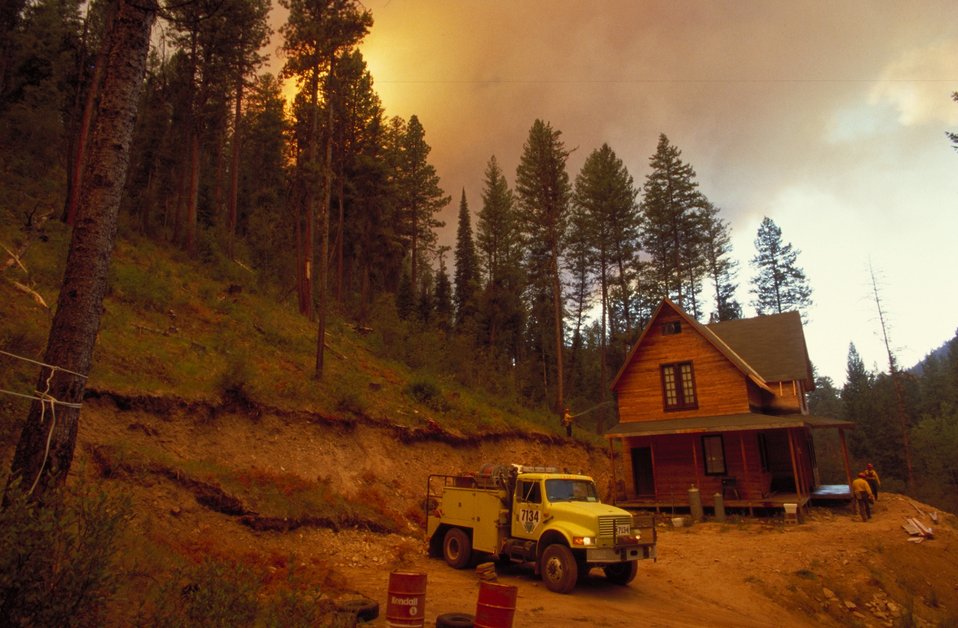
Retardant measures Urban interface Heavy Engine Fire Season 2000 Lower Snake River District LSRD